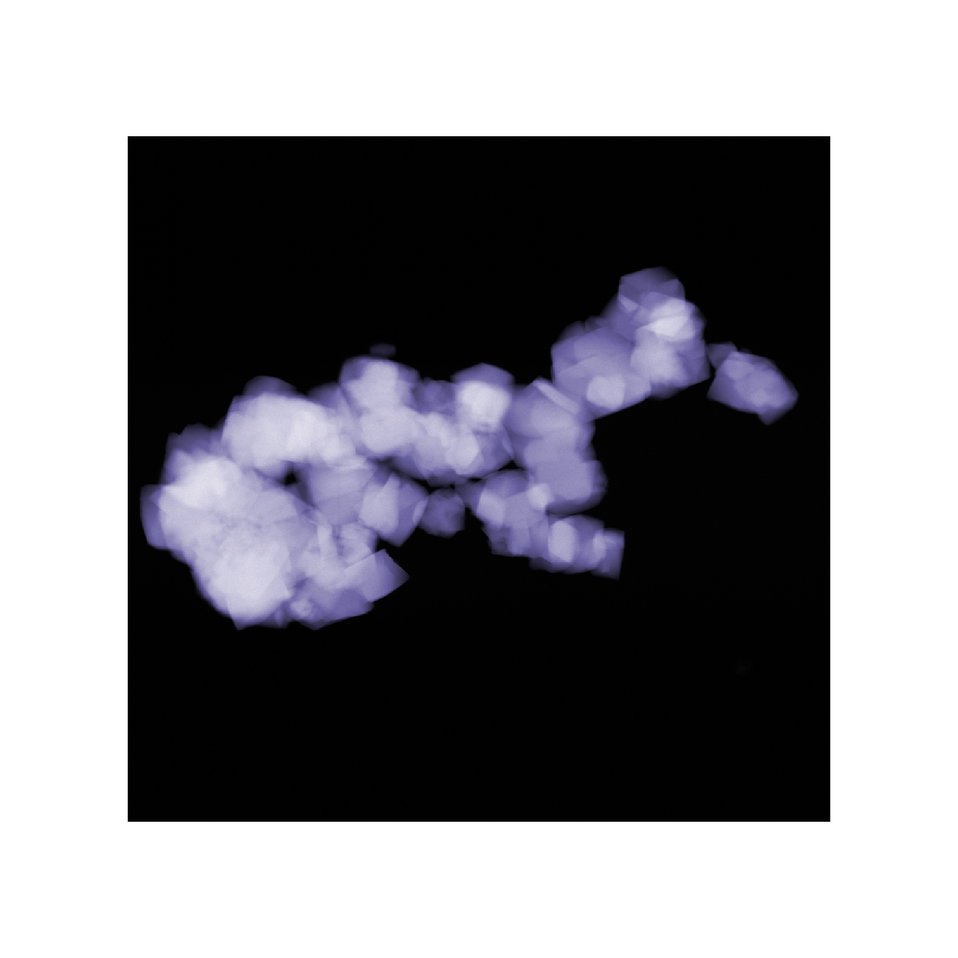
New Reference Materials Support Industrial Zeolites

Zeolite Y, here magnified with dark field scanning transmission electron microscopy, is used to increase the yields in petroleum refinery catalytic cracking units. Scale of the image is approximately 7 micrometers across.